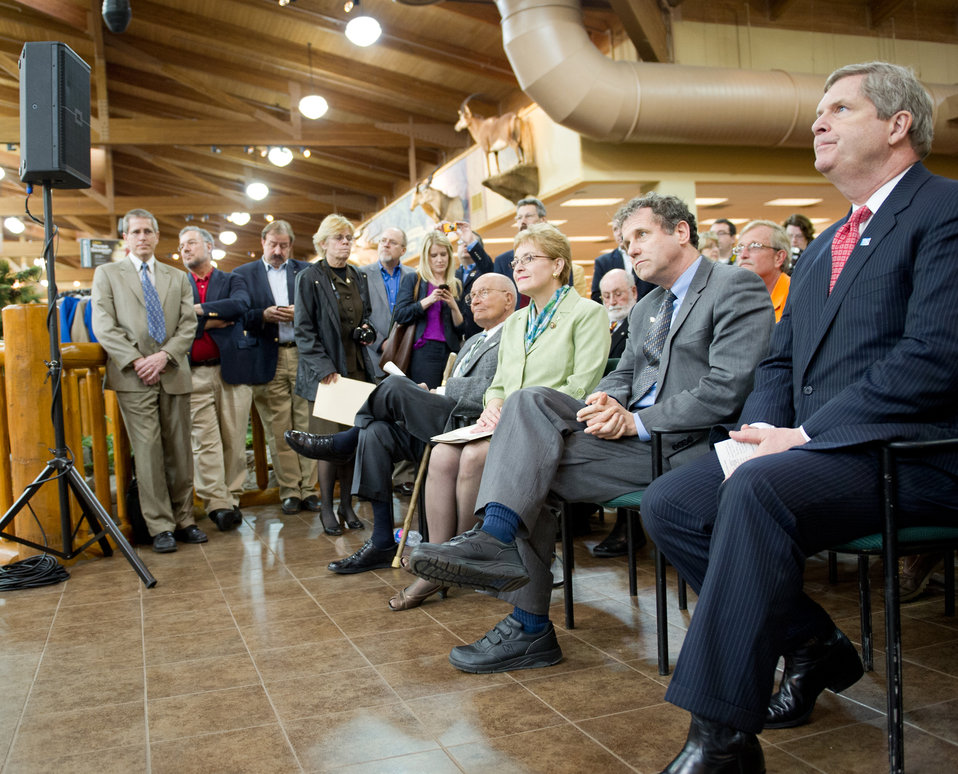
Agriculture Secretary Tom Vilsack highlighted the U.S. Department of Agriculture's conservation work at a Cabela's store in Dundee, MI, on March 16, 2012 .